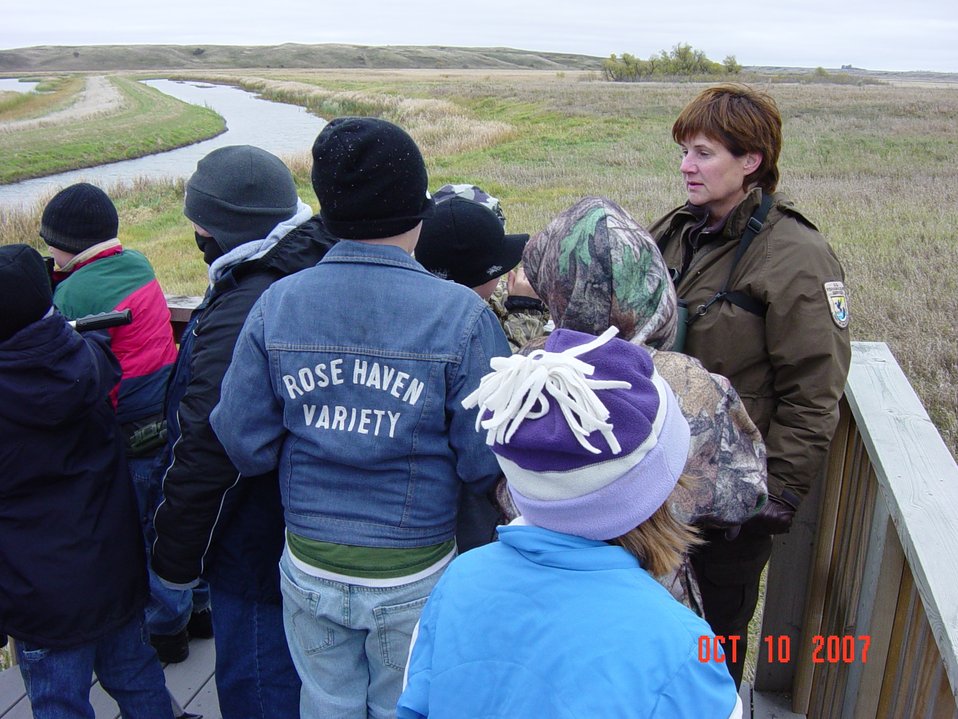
Arrowwood National Wildlife Refuge

Arrowwood NWR Biologist Scherr speaks with a school group during National WIldlife Refuge Week.